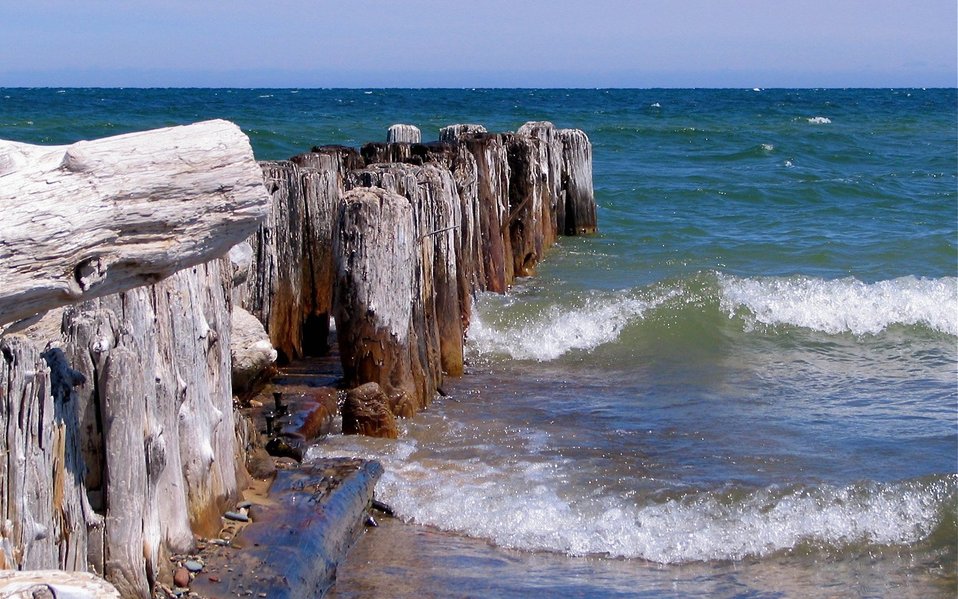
Whitefish Point, Lake Superior